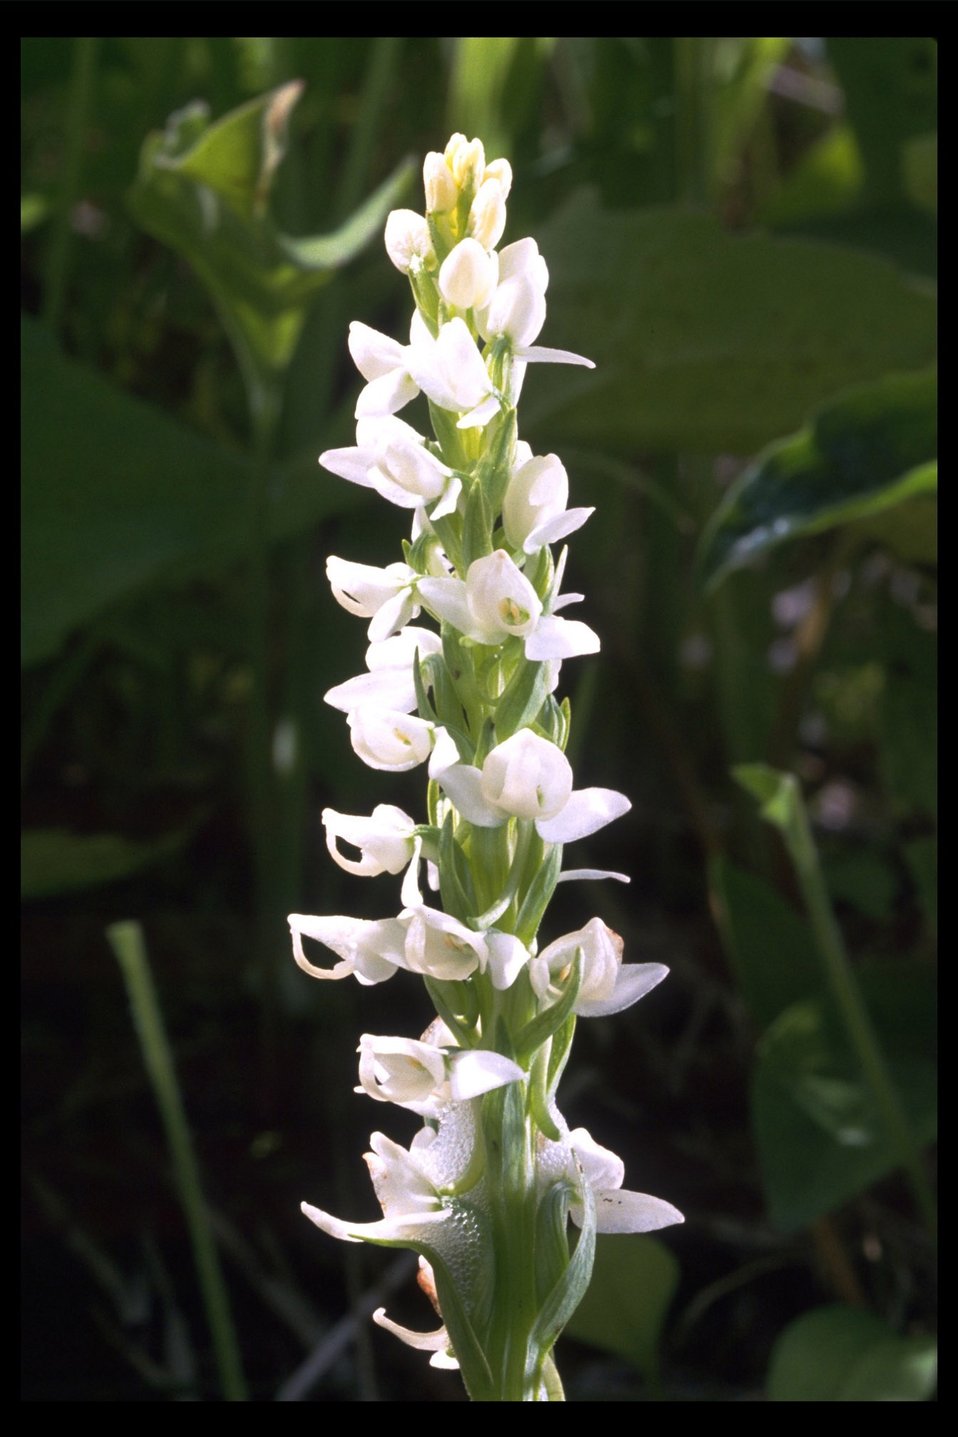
White-flowered Bog Orchid (Platanthera leucostachys) on Fredenberg Butte.